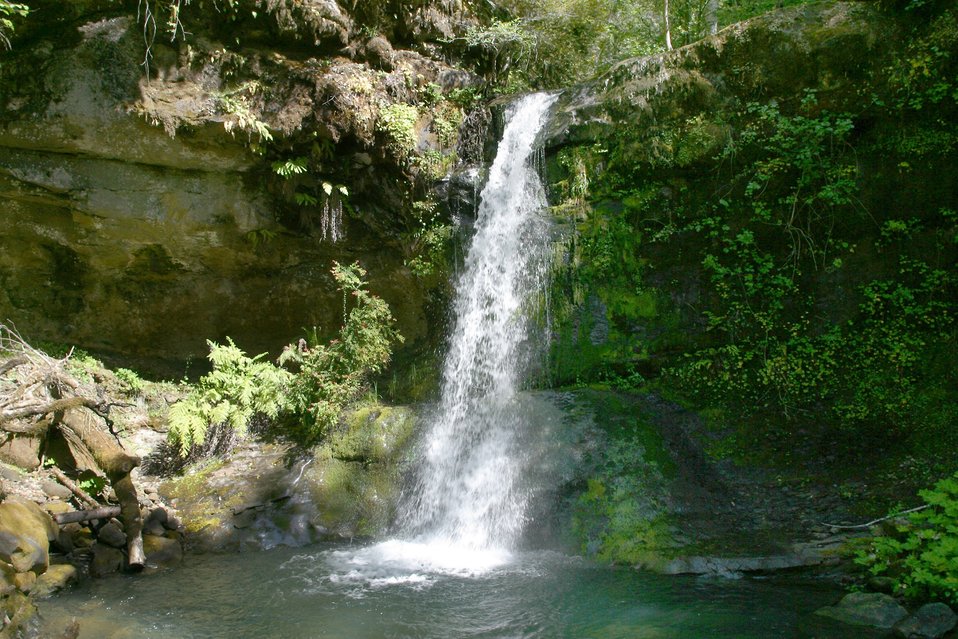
Wild section of the Rogue River from Grave Creek to Foster Bar May 19 to May 22.